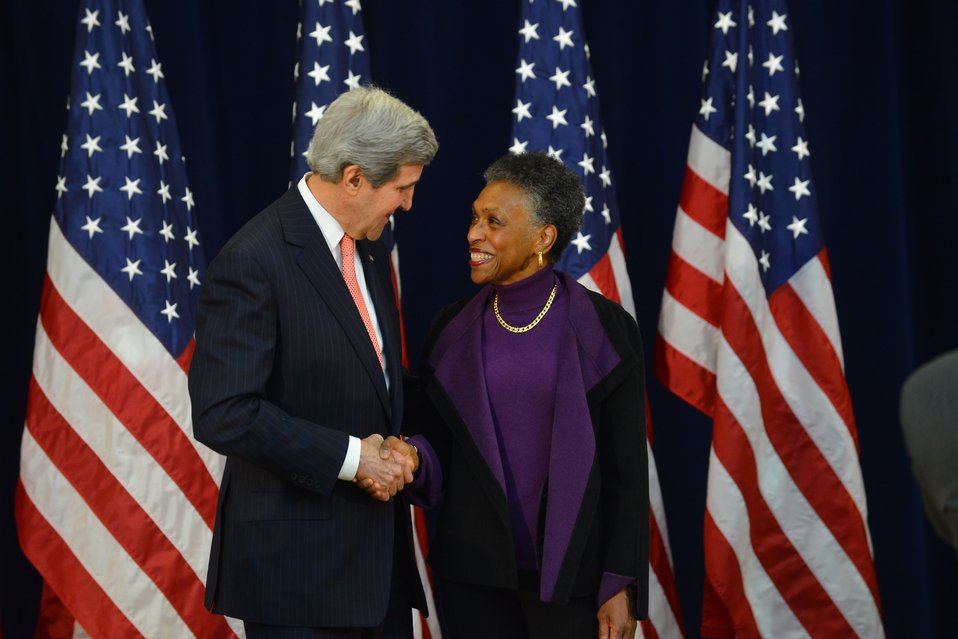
Secretary Kerry Hosts the Annual Department of State Retirement Ceremony

U.S. Secretary of State John Kerry hosts the annual Department of State Retirement Ceremony at the U.S. Department of State in Washington, D.C., on January 28, 2014.